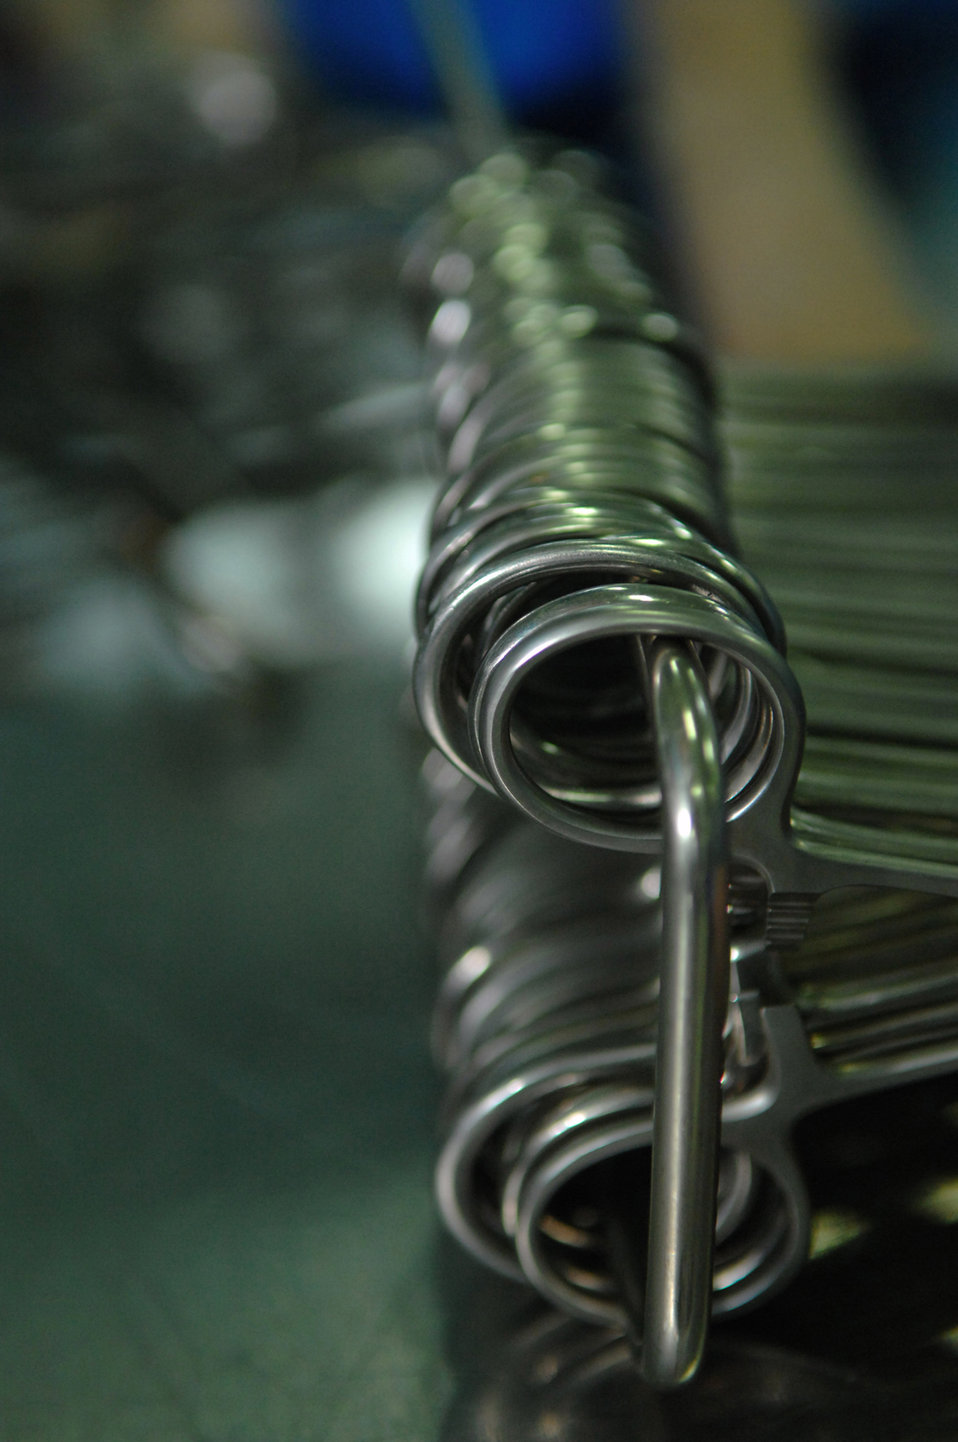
No germs allowed

Medical instruments used at the Air Force Theater Hospital are pulled out of the ultrasonic bath wait to be packaged up to be placed in a sterilizer March 19 at Balad Air Base, Iraq. The ultrasonic bath is used to pull any partials, fluid or debris off of the tool before sterilization begins. The hospital staff treats more than 1,200 coalition forces members, third country nationals and local citizens each month.